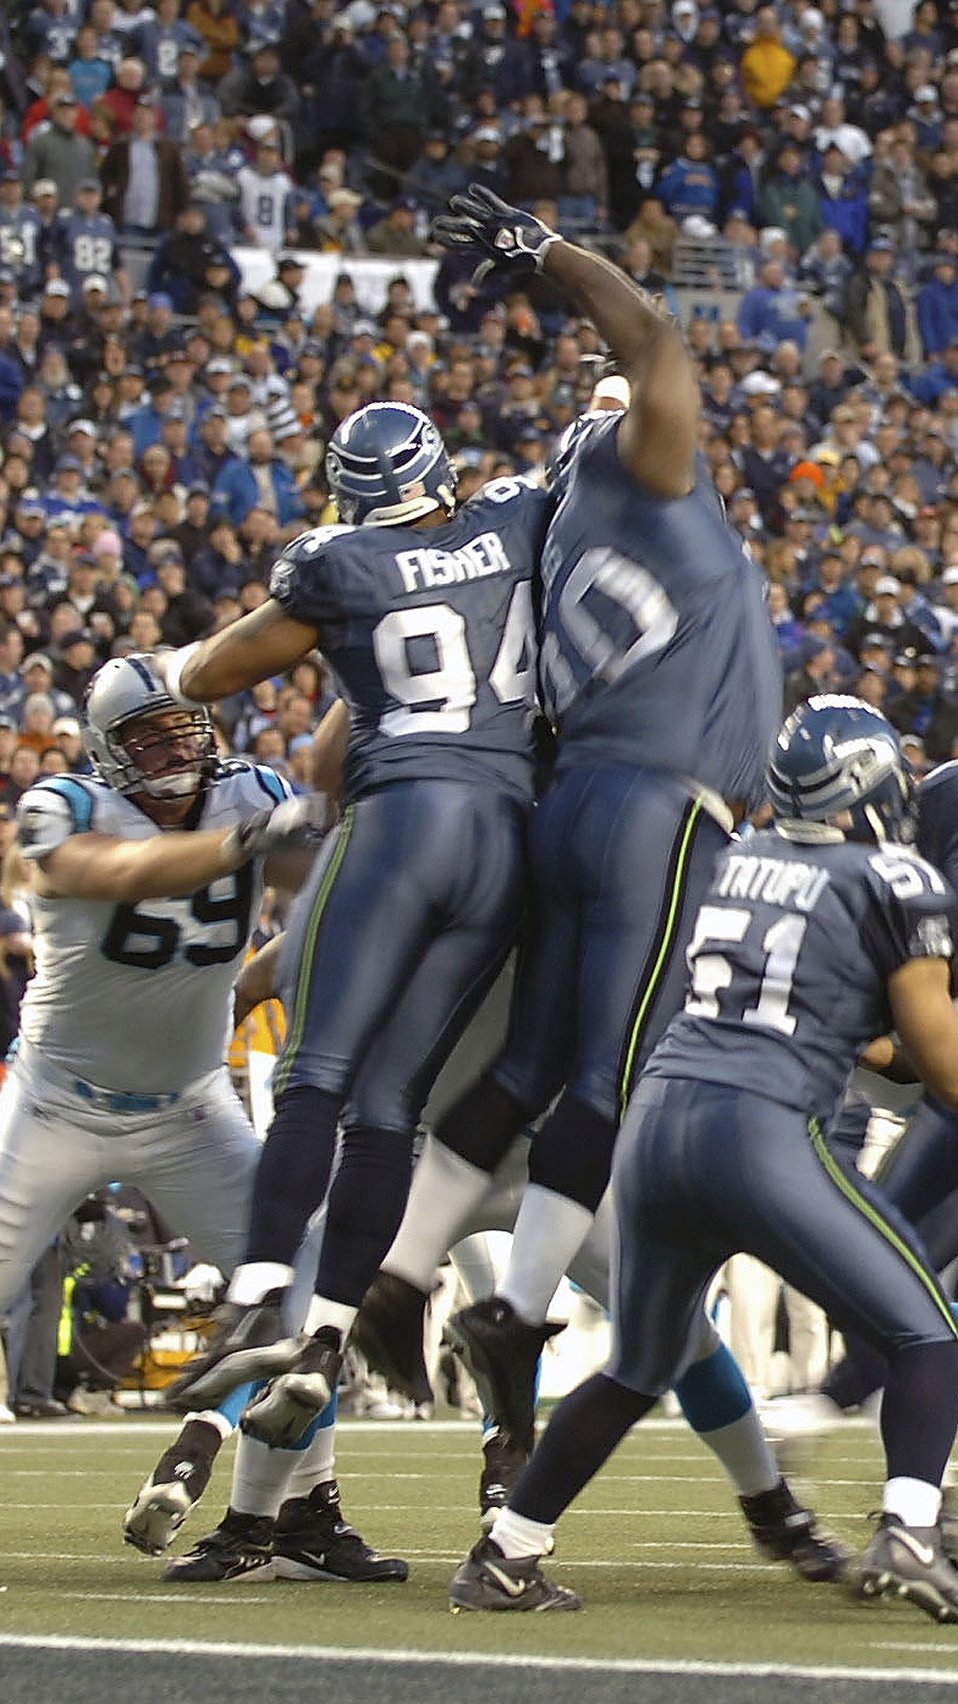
Tackling Guardsman

SEATTLE (AFPN) -- Defensive end (No. 94) Bryce Fisher, a captain in the Washington Air National Guard, gets airborne while trying to block a Carolina Panthers' extra-point kick during the Seattle Seahawks' 34-14 victory over the Carolina Panthers in Seattle on Jan. 22. The Seahawks clinched the National Football Conference title, are playing in Super Bowl XL on Feb. 5.